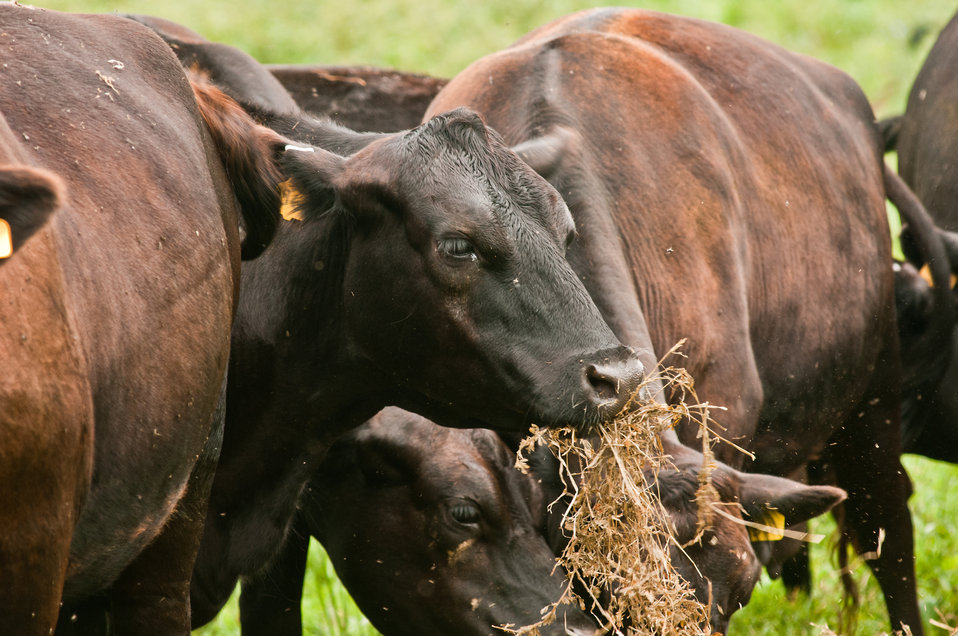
Black Angus cows and calves graze organic pastures, and for added nutrition and variety, they enjoy a daily feeding of sweet silage at Nick’s Organic Farm, owned by Nick Maravell, in Adamstown, MD on Friday, July 12, 2013. The white plastic wrapped bales of pasture grass and alfalfa have been fermenting for months to create sweet silage that stores well and can be used to feed cattle at varying amount all year long. The fermentation process sweetens the taste and increases the vitamin levels. The farm produces Black Angus beef, chicken, turkey, eggs, hay, soybeans, corn, alfalfa, orchard grass, rye; and other crops. The cattle are 100% grass-fed receiving certified organic pasture, certified organic hay (in winter), water and mineral salts mixed with sea kelp. The cattle are not fed hormones, antibiotics or animal products. Poultry feed from grain is ground from organic grain. The poultry also graze on organic pastures. The farm has conducted on-farm research with federal, state and non-profit agencies to refine organic practices. An organization such as the U.S. Department of Agriculture (USDA) Agricultural Research Service (ARS) center in Beltsville has been able to conduct research to improve organic crops and to breed and manage the cattle so that they have.